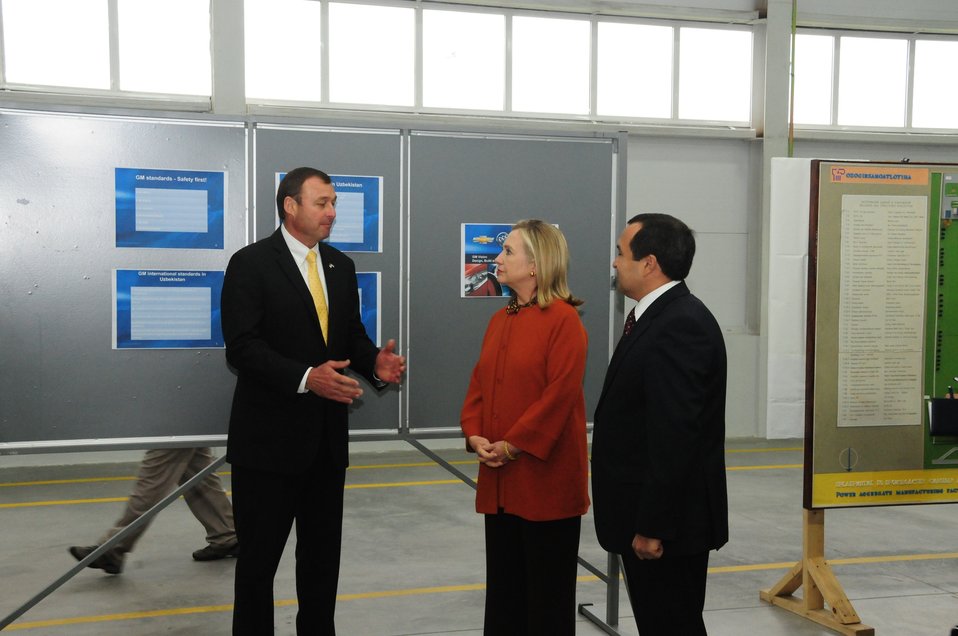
GM Uzbekistan General Director Spendel Discusses the Factory With Secretary Clinton and Uzbek Deputy Prime Minister Rozukulov

General Motors (GM) Uzbekistan General Director Juergen Spendel, left; discusses the GM factory with U.S. Secretary of State Hillary Rodham Clinton, center; and Uzbek Deputy Prime Minister Ulugbek Rozukulov, right; in Tashkent, Uzbekistan, on October 23, 2011.